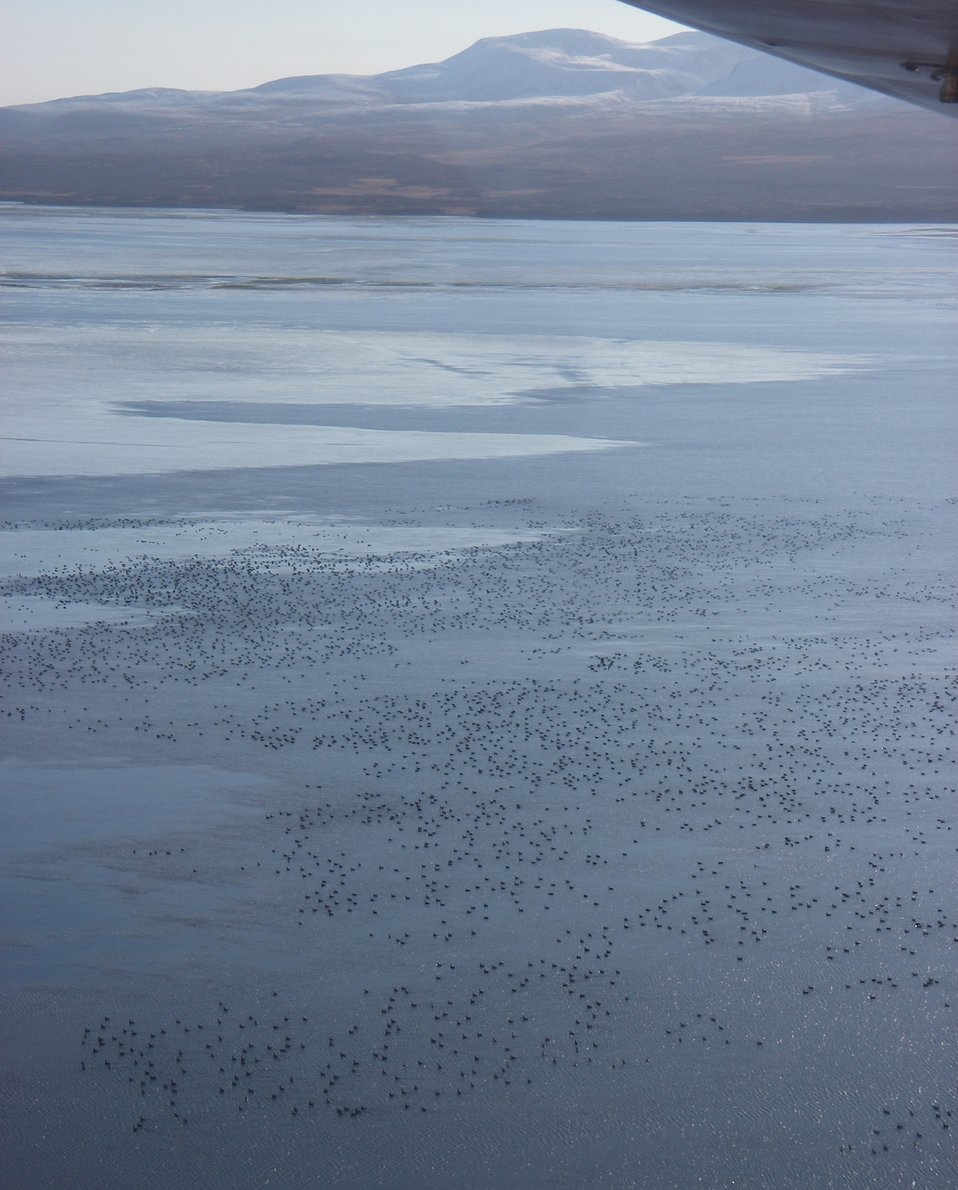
Brant at Izembek Lagoon

Izembek National Wildlife Refuge